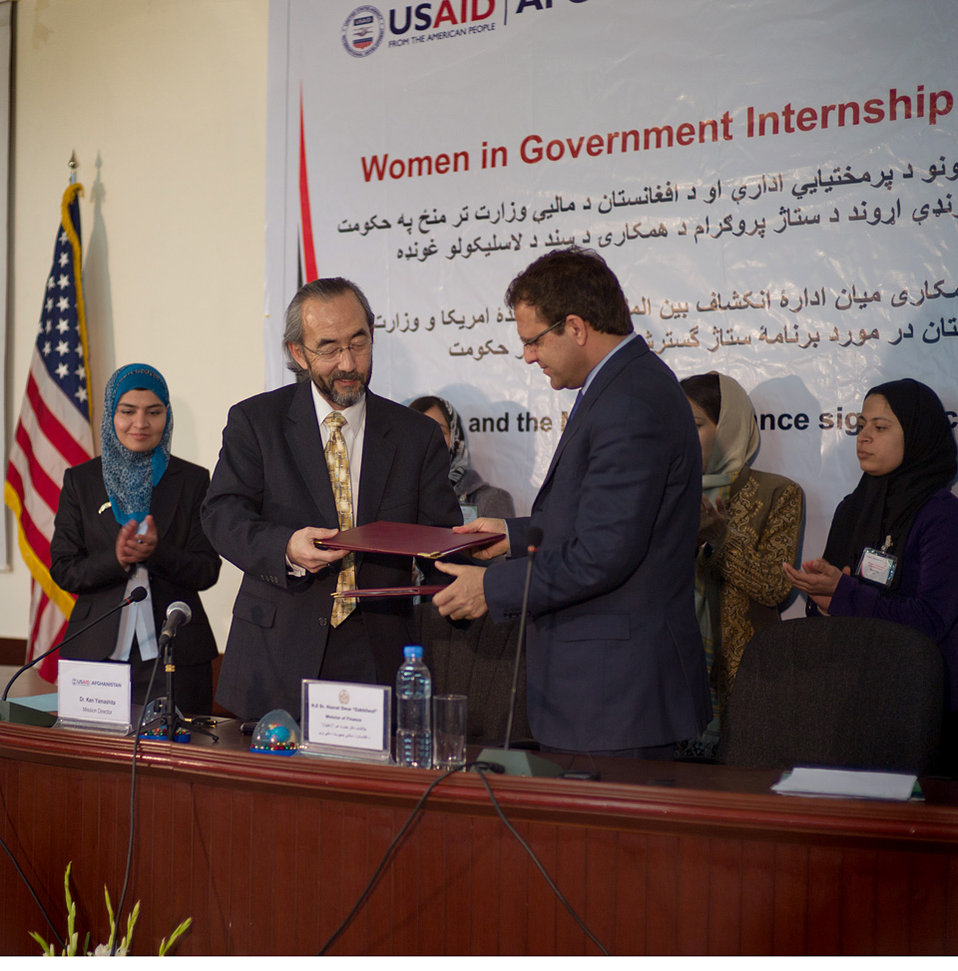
Image 6 3:18:12 exchanging